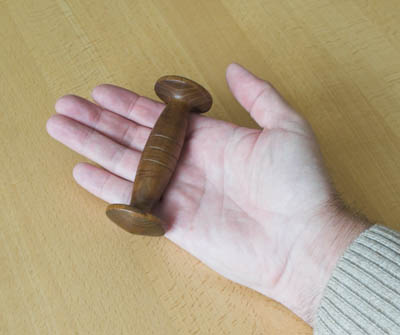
Yawara